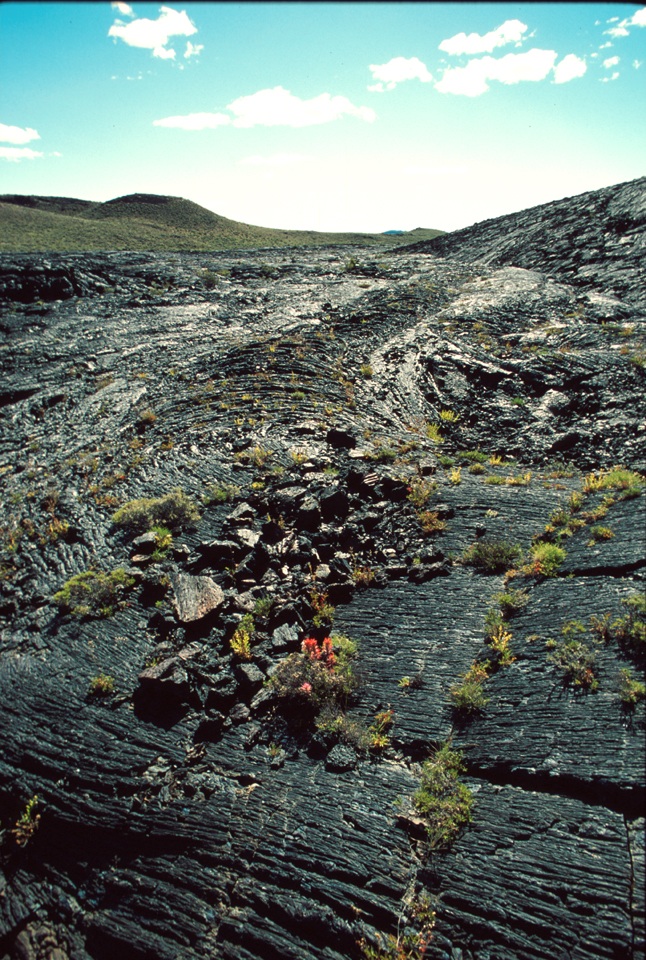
Craters of the Moon National Monument Shoshone Field Office USRD Upper Snake River District